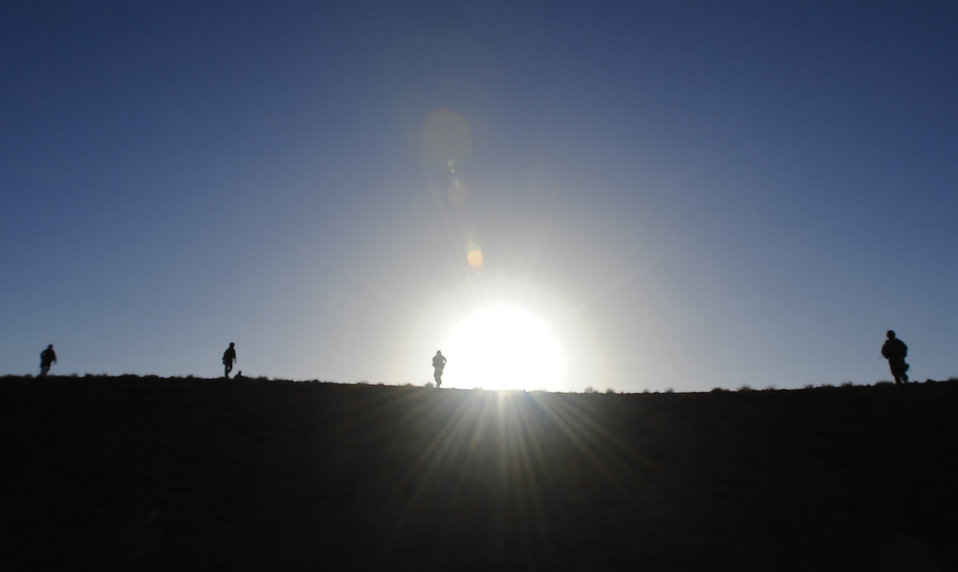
Provincial Reconstruction Team Zabul

Soldiers and Airmen make their way across an open field during a patrol Nov. 1, 2010, near the city of Qalat, Afghanistan, in the Zabul Province.